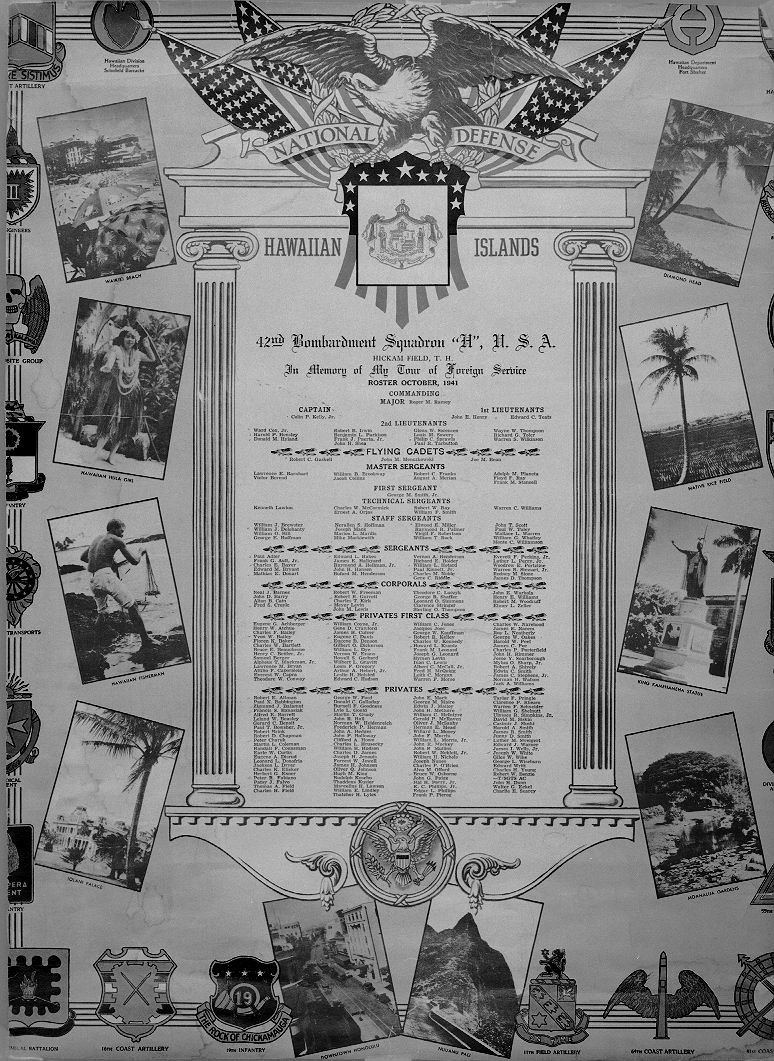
42nd Bombardment Squadron Roster

This is a commemorative poster featuring the roster of the 42nd Bombardment Squadron, one of the units assigned to Hickam Field, Hawaii in October, 1941.